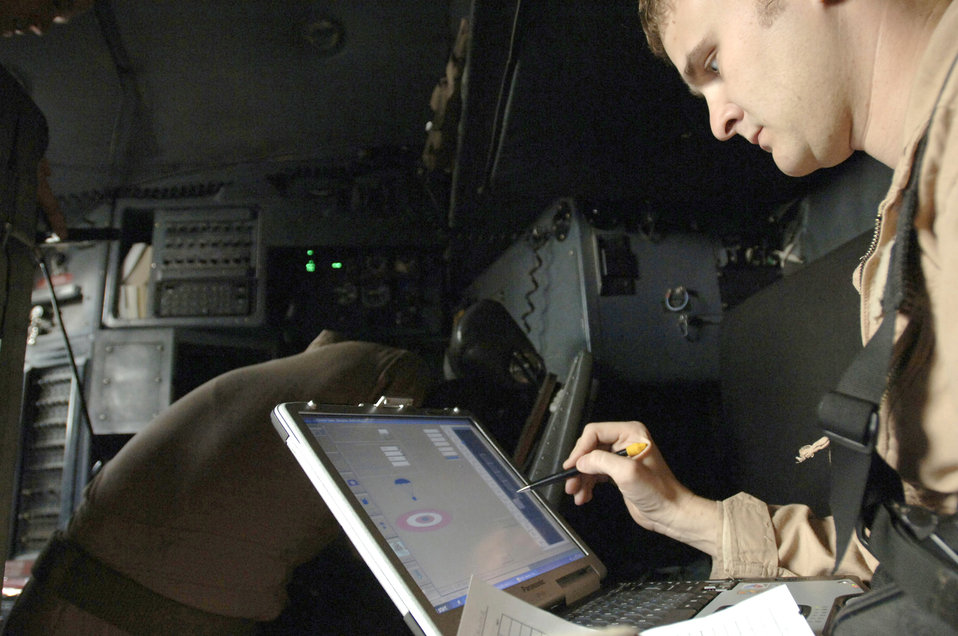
First JPADS airdrop over Iraq a success

Capt. Kenny Bierman works with the Joint Precision Airdrop System mission planning software on a specialized laptop while onboard a C-130 Hercules Feb. 16 over Iraq, as he prepares for the first employment of JPADS with the Improved Container Delivery System in support of Operation Iraqi Freedom. Captain Bierman is assigned to the 777th Expeditionary Airlift Squadron.